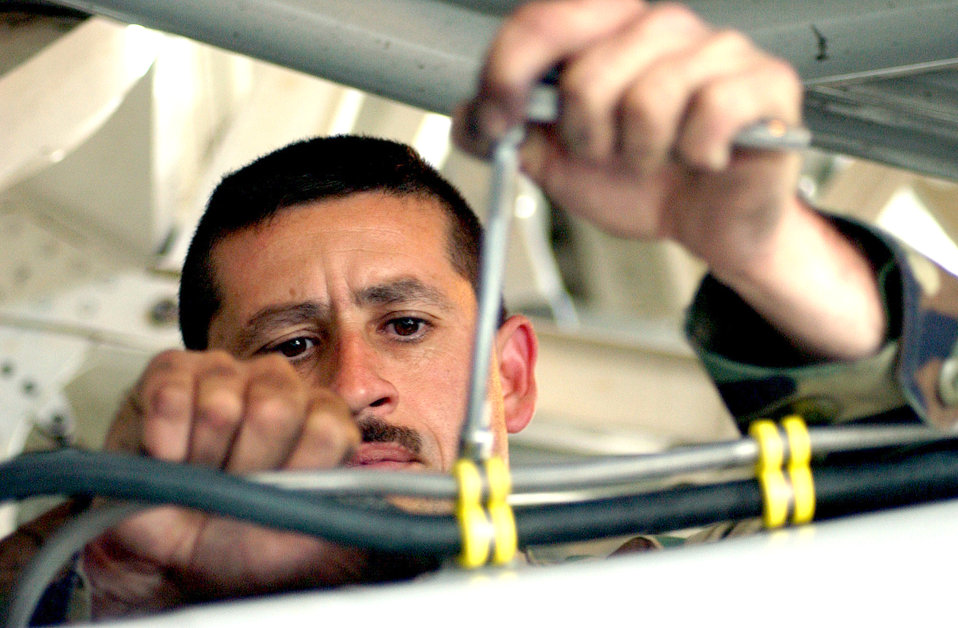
Mr. Fix-It

MCCHORD AIR FORCE BASE, Washington -- Staff Sgt. Greg Bernett replaces torn and unservicable clamps in the wheel well of a C-17 Globemaster III here recently. Sergeant Bernett is an aircraft maintainer assigned to the 62nd Maintenance Group.